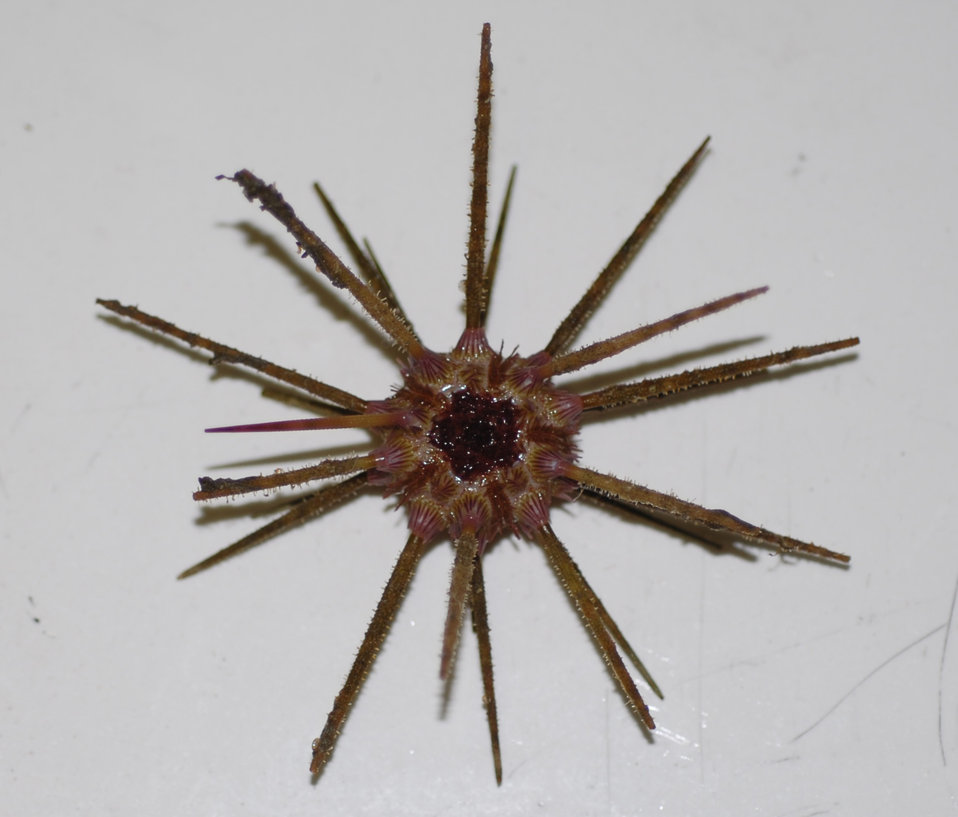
A species of pencil urchin ( Stylocidaris affinis )